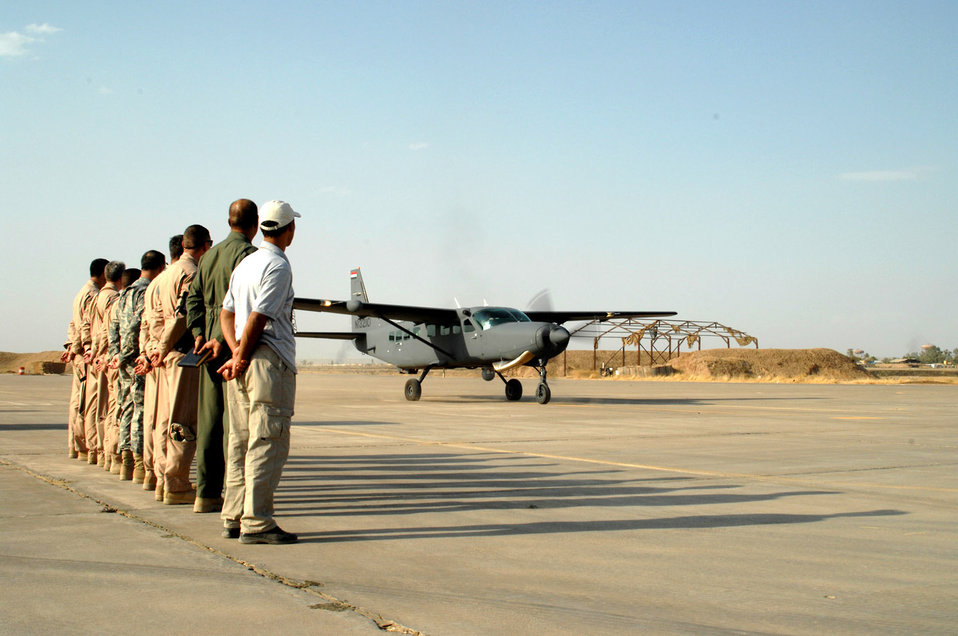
Iraqi air force flying training school opens at Kikuk

Members of the 52nd Flying Training Squadron stand in formation as the first students arrive Oct. 1 to the Iraqi air force flying training school at Kirkuk Air Base, Iraq. This flight was officially the first sortie flown by the school as the four Iraqi air force students took control of the aircraft for a few minutes in transit to see what it is they are working toward. The school will instruct the students in both fixed- and rotary-wing piloting.